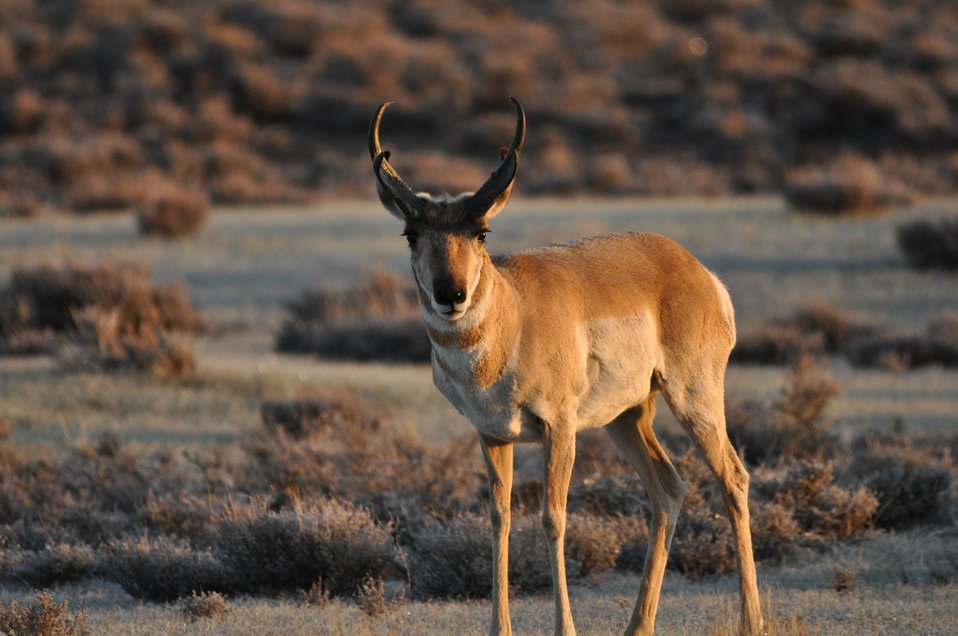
Pronghorn

Photo Credit: Jeannie Stafford/USFWS
Pronghorn (Antilocapra americana) are endemic to interior western and central North America. In North America they are commonly referred to as pronghorn antelope or simply antelope as it closely resembles the true antelopes of the Old World. They can run exceptionally fast and they are often cited as the second-fastest land animal, second only to the cheetah. This male was photographed at a greater sage-grouse lek near Bridgeport, CA.